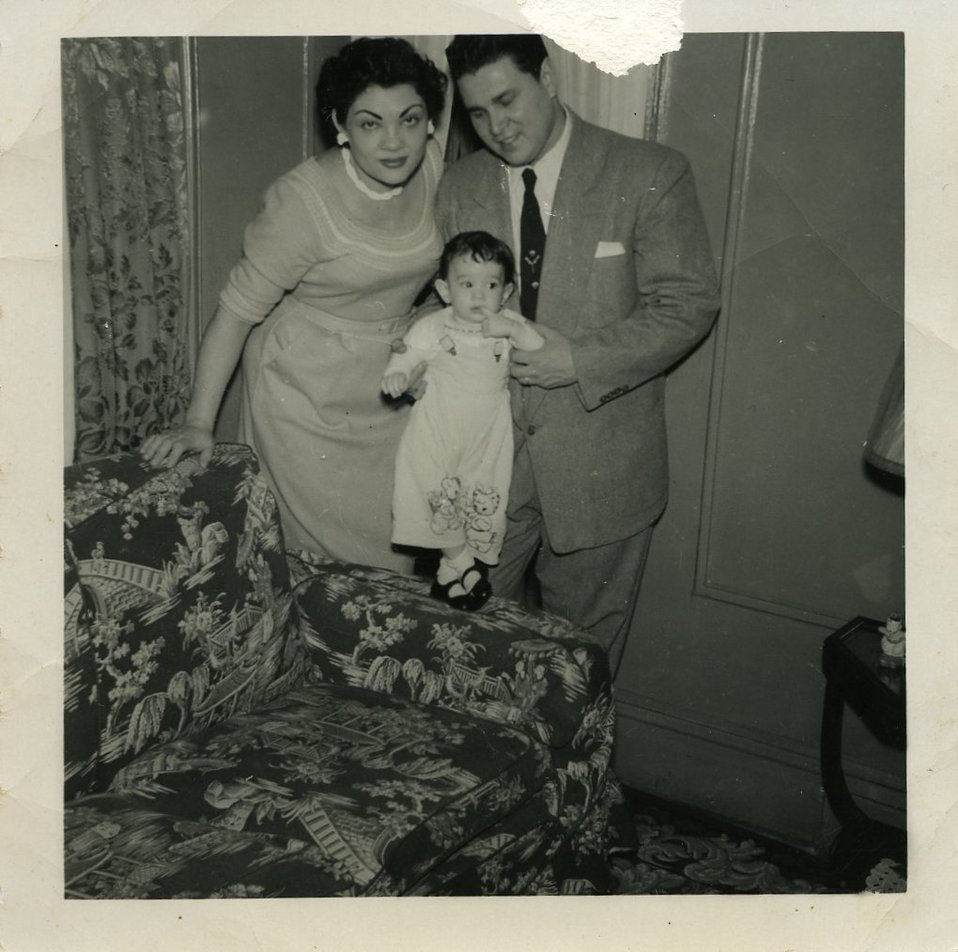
Youth 7

Judge Sonia Sotomayor with her mother and father.